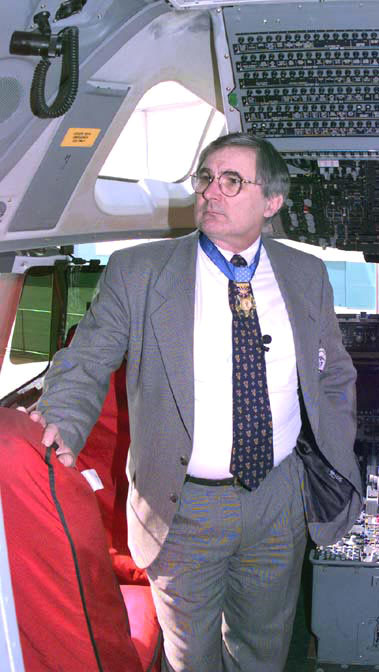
Spirit of John L. Levitow

LONG BEACH, Calif. -- John L. Levitow examines the cockpit of the C-17 Globemaster III named for him, the Spirit of John L. Levitow, Jan. 23. Levitow, one of only 16 airmen awarded the Medal of Honor for exceptional heroism during wartime died Nov. 8 at his home in Connecticut after a lengthy battle with cancer.